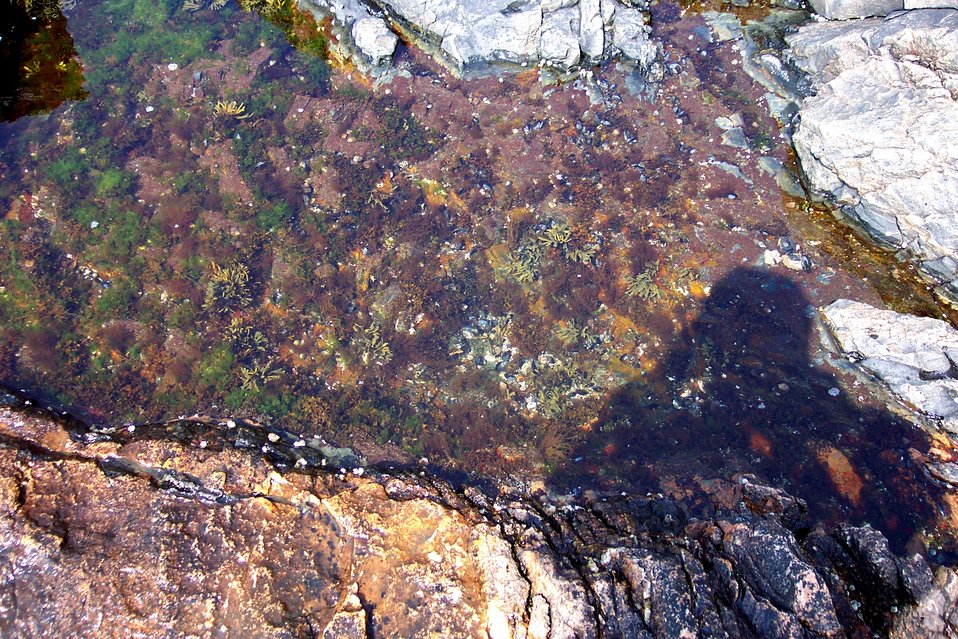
Tide pool with various types of algae below Bass Harbor Head Lighthouse.